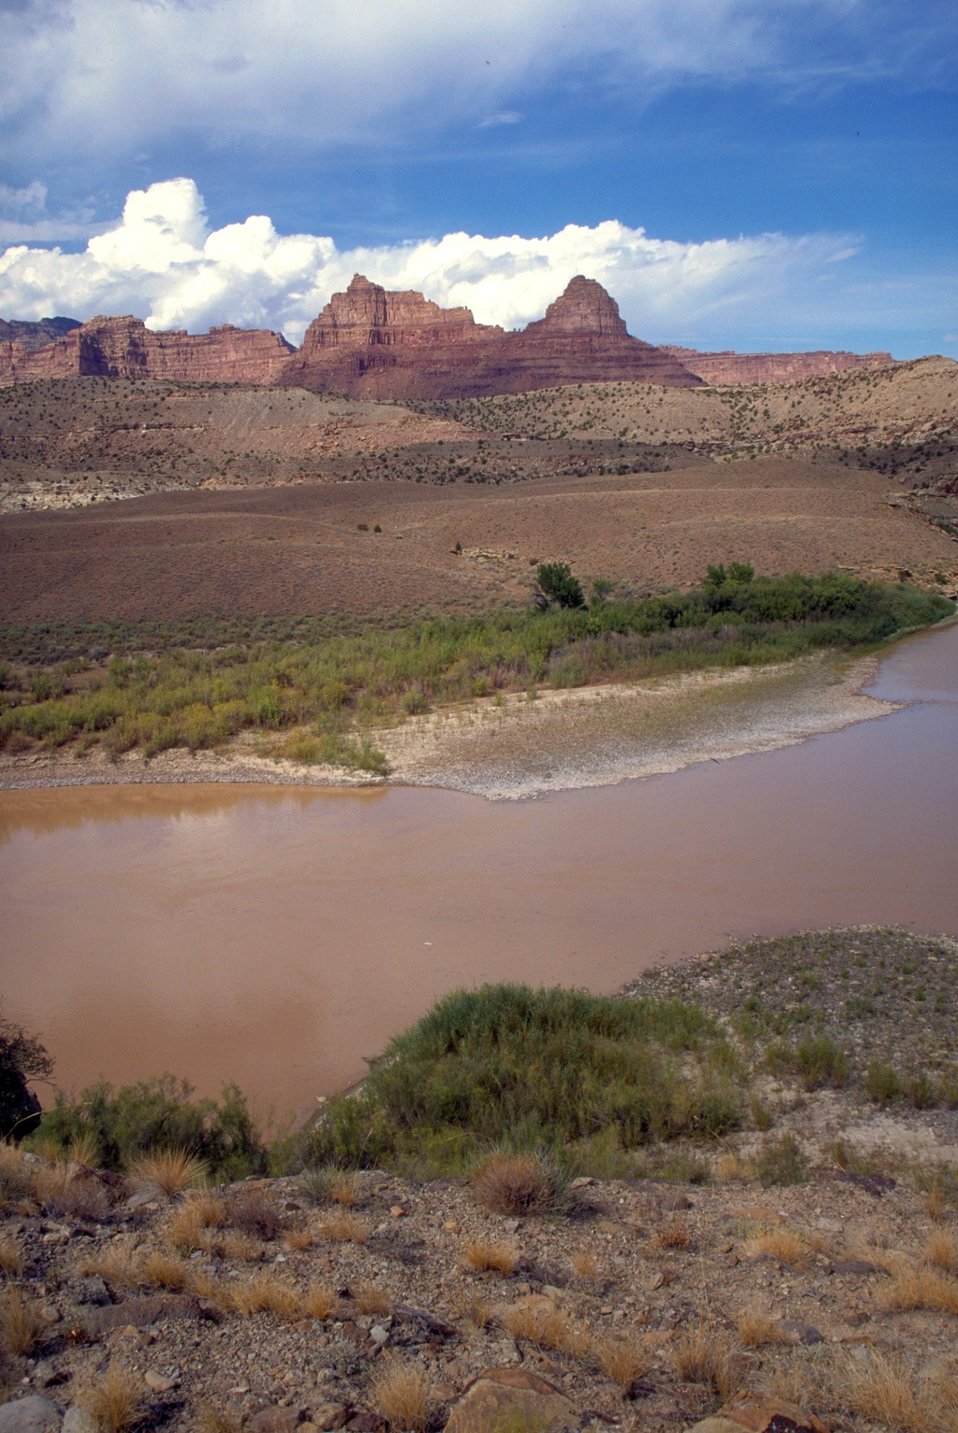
Desolation/Gray Canyons near Price, Utah.